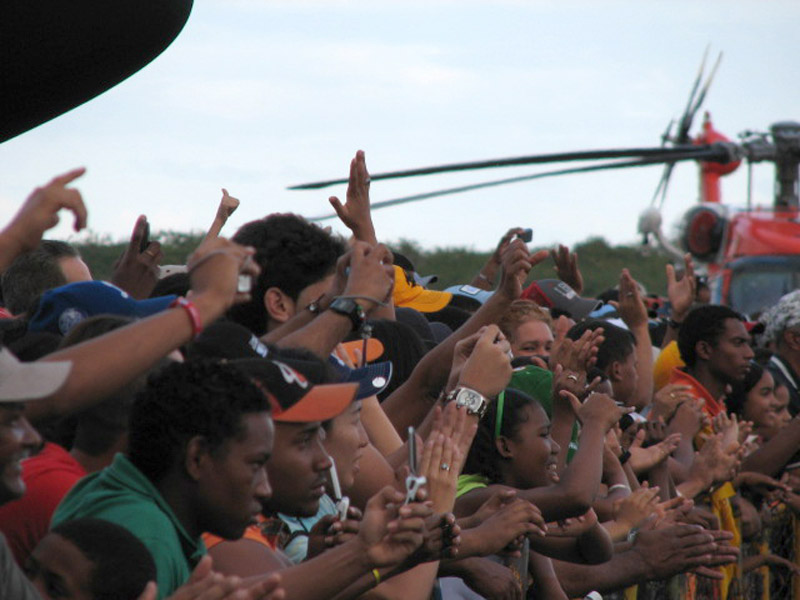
Dominican Republic air show

Dominican aviation fans wait to meet Capt. Russ Piggott, an F-16 Fighting Falcon demonstration pilot, after his performance Feb. 17 at the Dominican Republic air show in Santo Domingo. U.S. Airmen and Coast Guardsmen joined with their Dominican counterparts in commemorating the 60th Anniversary of the Dominican air force with an impressive airshow.